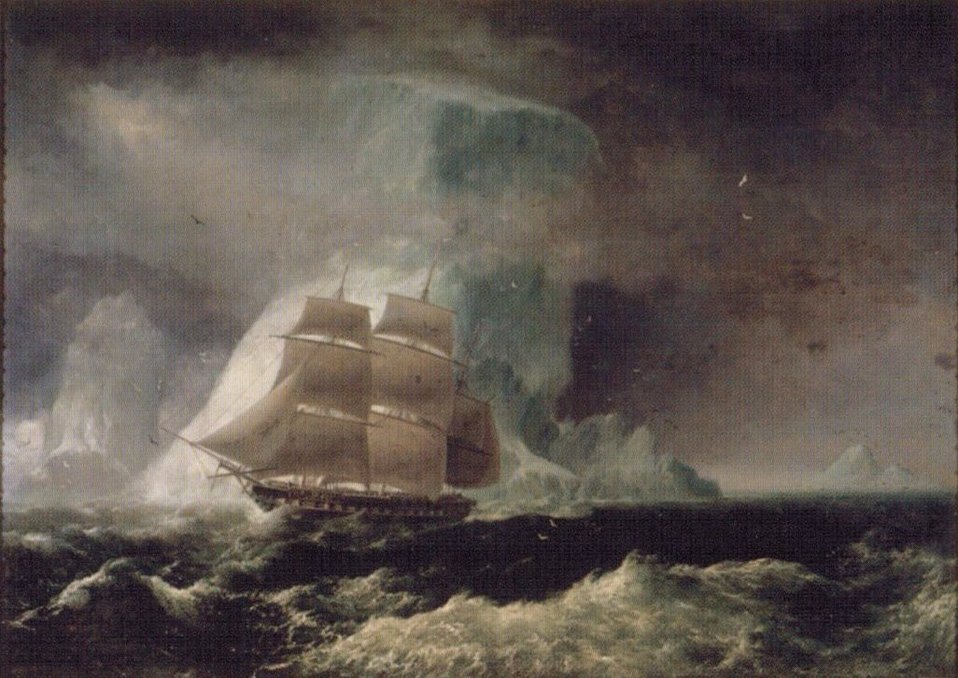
'The H. M. S. Blonde', by Robert Dampier, 1825, Washington Place